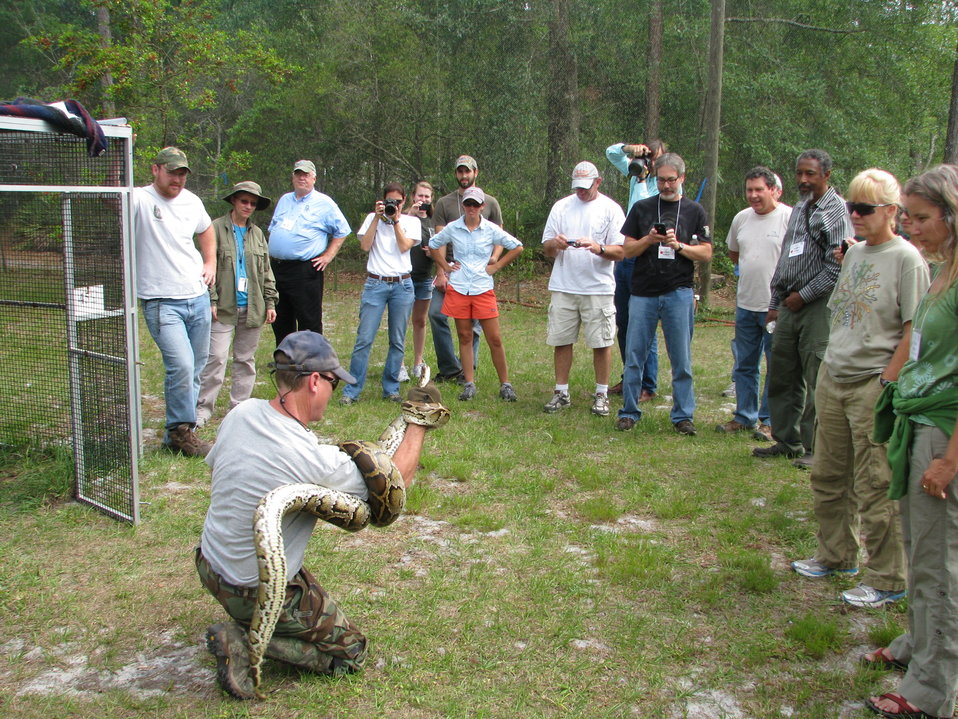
The U.S. Department of Agriculture's (USDA) Animal Plant Health and Inspection Service (APHIS) Wildlife Services (WS) researchers provide training to other biologists on how to trap and handle invasive Burmese pythons. The invasive snakes are increasing in numbers and expanding their range in Florida.